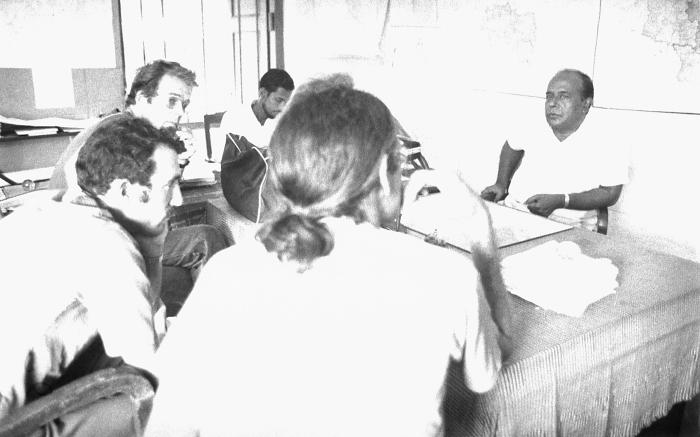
This 1975 image depicted a number of eradication campaign officials who were meeting to discuss strategies, and update one another as to progress being made in what would prove to be one mankind's greatest achievements in the realm of public health, the worldwide eradication of smallpox.